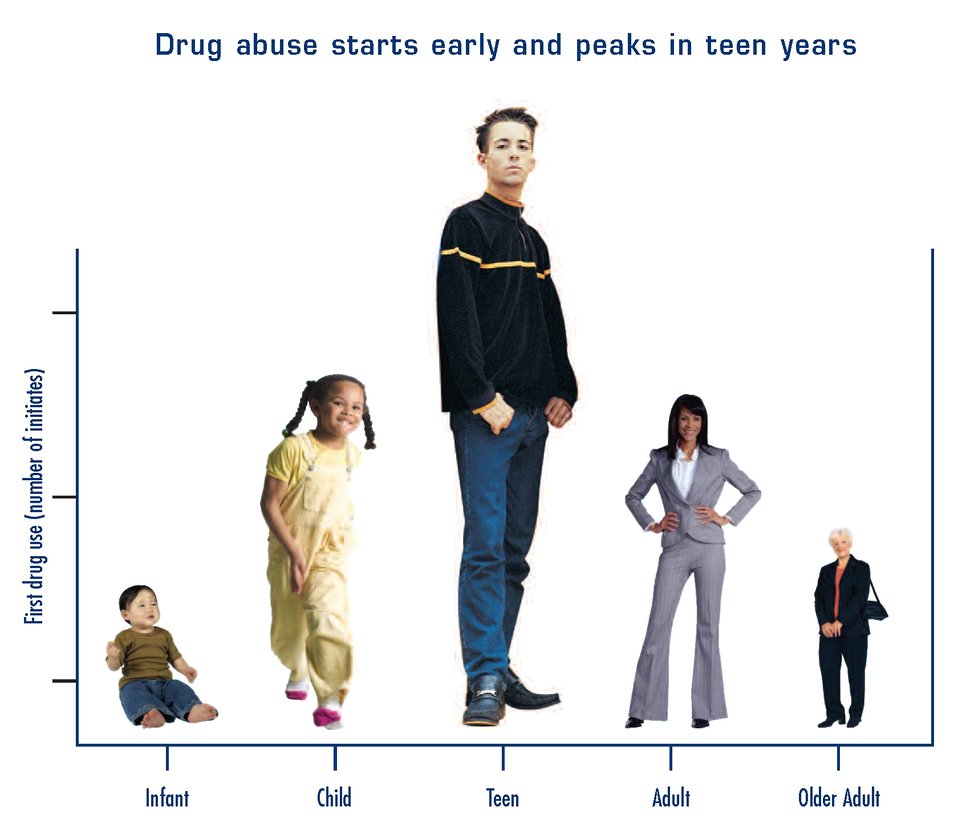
Drug Abuse starts early and peaks in teen years